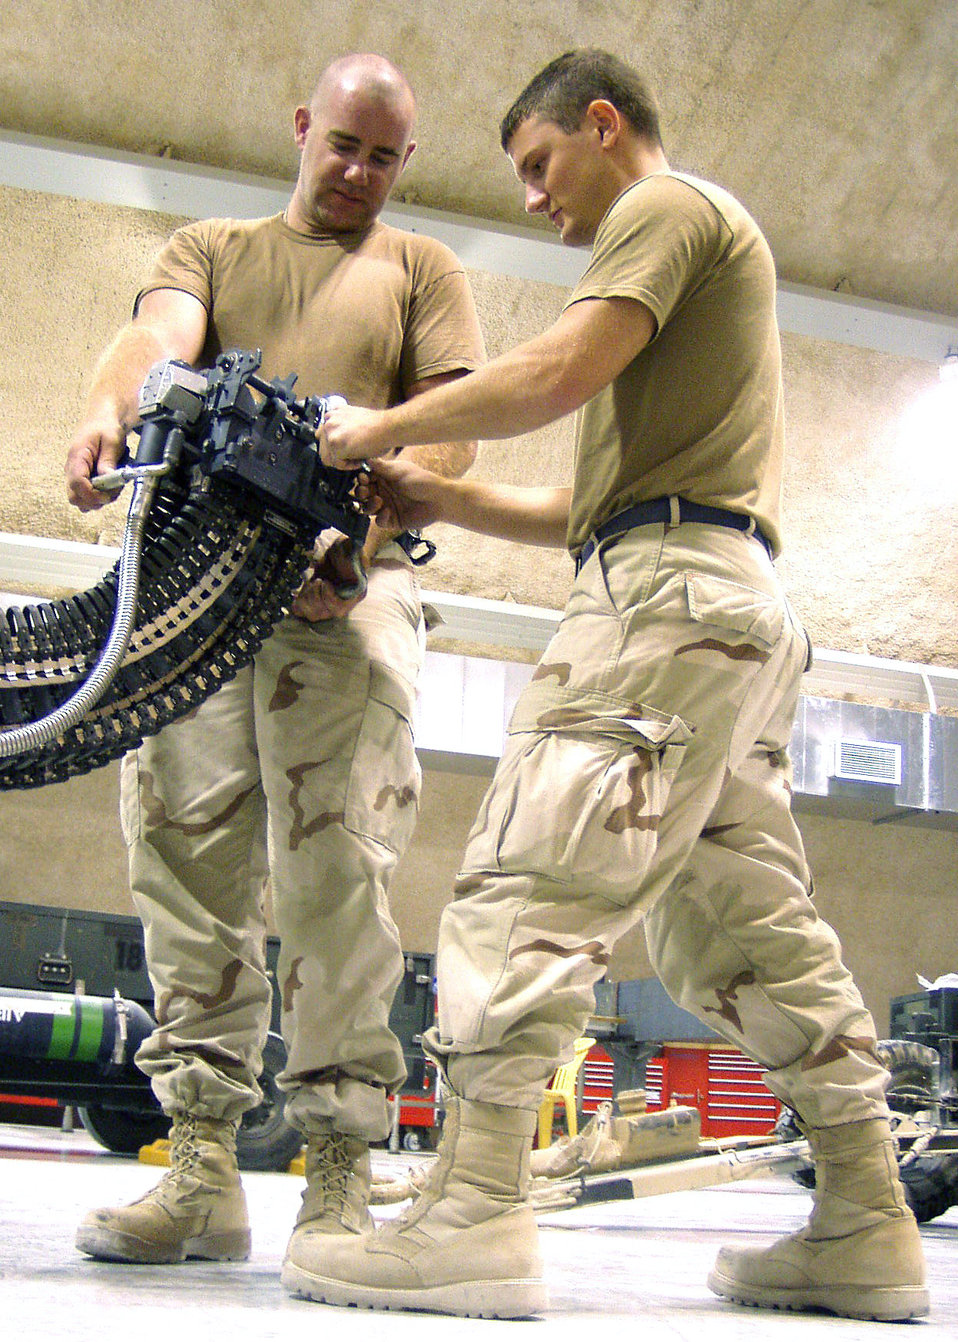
Loader up

SOUTHWEST ASIA -- Staff Sgt Christopher Hood (left) and Senior Airman Nathan Keller adjust an ammunition loader at a forward-deployed location. It is used to load 20 mm ammunition into F-15 Eagle and F-16 Fighting Falcon internal gun systems and can hold enough ammunition for about three aircraft. Environmental conditions in the desert require Airmen from the armament flight to inspect the loader every 45 days. Sergeant Hood is deployed from Seymour Johnson Air Force Base, N.C., and Airman Keller is from the 122nd Fighter Wing at Fort Wayne Air National Guard Base, Ind.